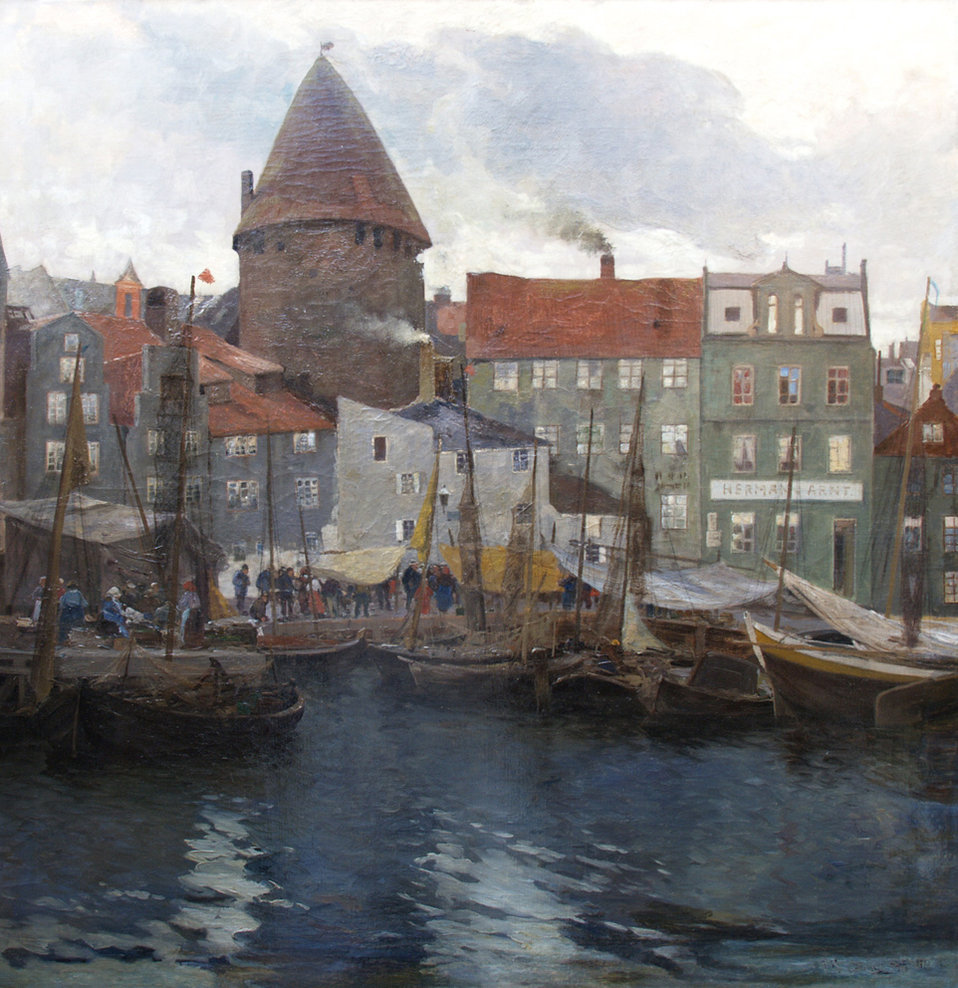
Reges Leben im Fischerhafen (von Danzig?). Ca. 98 x 100 cm.